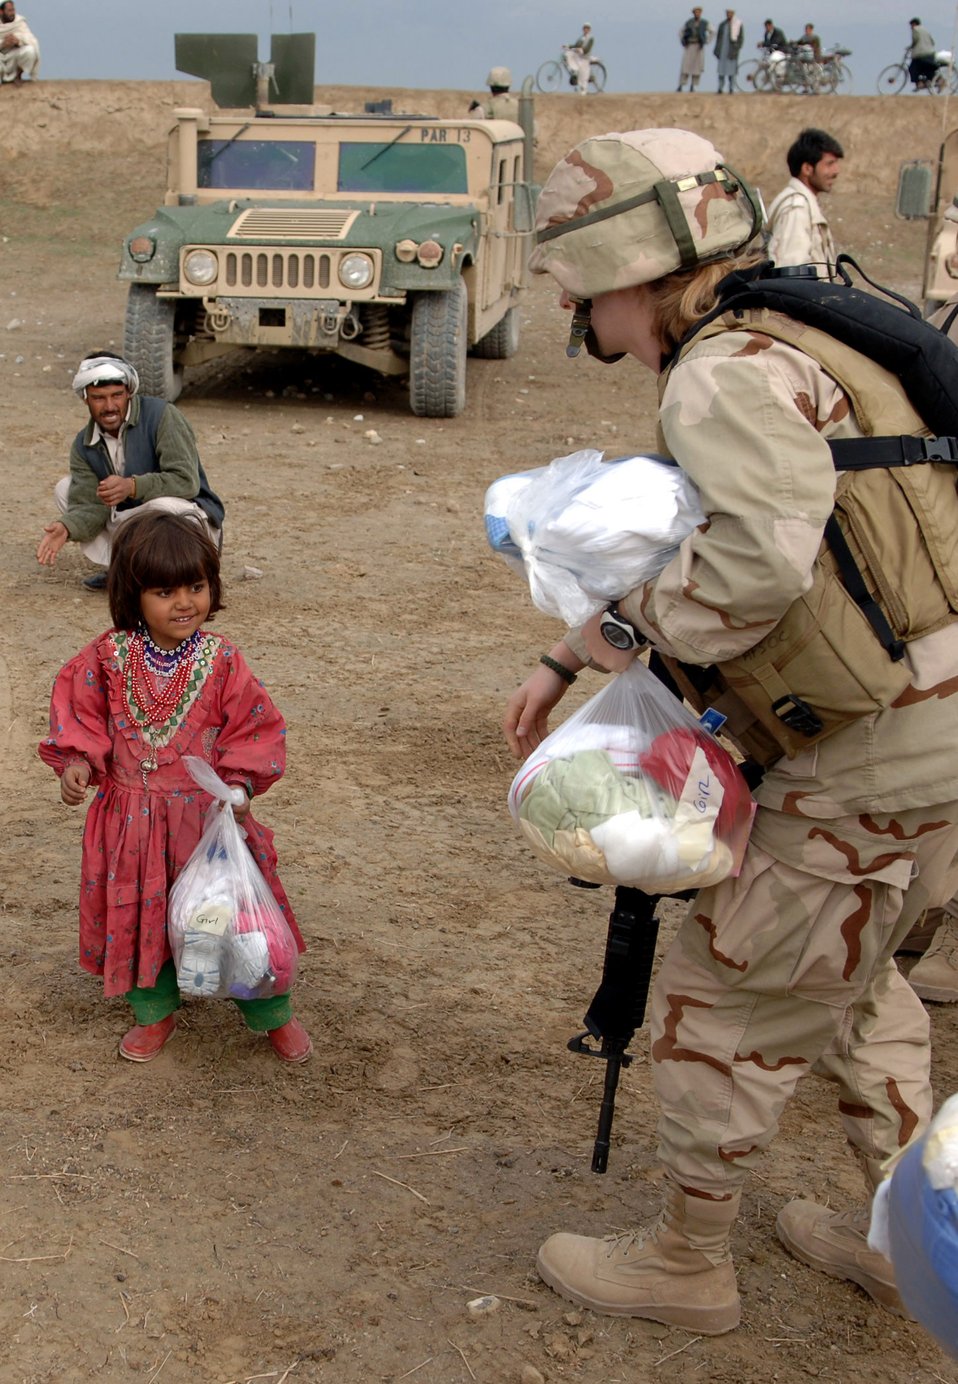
Airmen reach out

A young girl smiles at 1st Lt. Marcia Frazho after receiving a bag of assorted goods during a recent Adopt-A-Village visit to Gadia in Parwan Province, Afghanistan. Lieutenant Frazho is an intelligence officer assigned to the 455th Expeditionary Special Tactics Squadron at Bagram Air Base, Afghanistan.